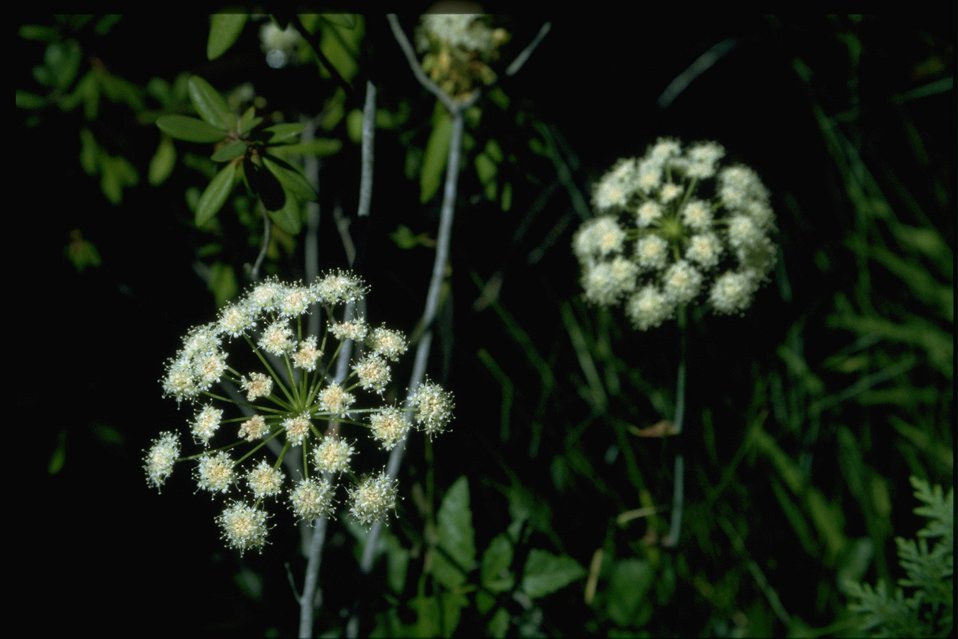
Closeup shot of Cicuta douglasii.